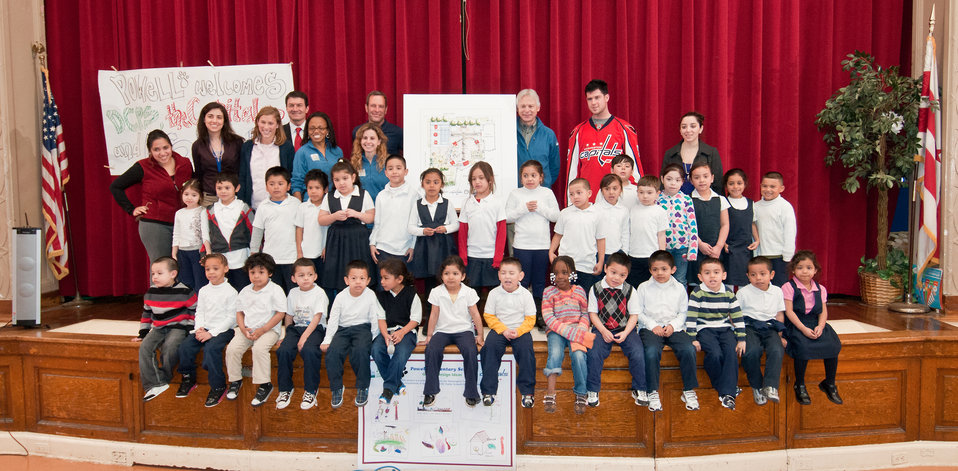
A class requested to have a group photo with The People’s Garden team for W. B. Powell Elementary School, consisting of the Washington Capitols, U.S. Department of Agriculture and D.C. Public Schools in Washington, D.C., who revealed to 289 parents and students, the School Garden Design Concept on Thursday, March 10, 2011. The design draft was created by Forest Service landscape architect Matt Arnn (left of design on stage), with the support of Natural Resources Conservation Service landscape architect Bob Sneickus (right of design), Outreach and Education Coordinator Annie Ceccarini (second left from design) and Project Manager Leslie Burks (third left from design) who worked with the Principal Janeece Docal (second from left, back row) and the school during an earlier visit to develop illustrated ideas from parents and students. Representing the Washington Capitols is Defenseman, Number: 52 Mike Green (red jersey), Comcast SportsNet Analyst Alan May (fourth left from design) and Director of Community Relations Elizabeth Wodatch (fifth left from design).